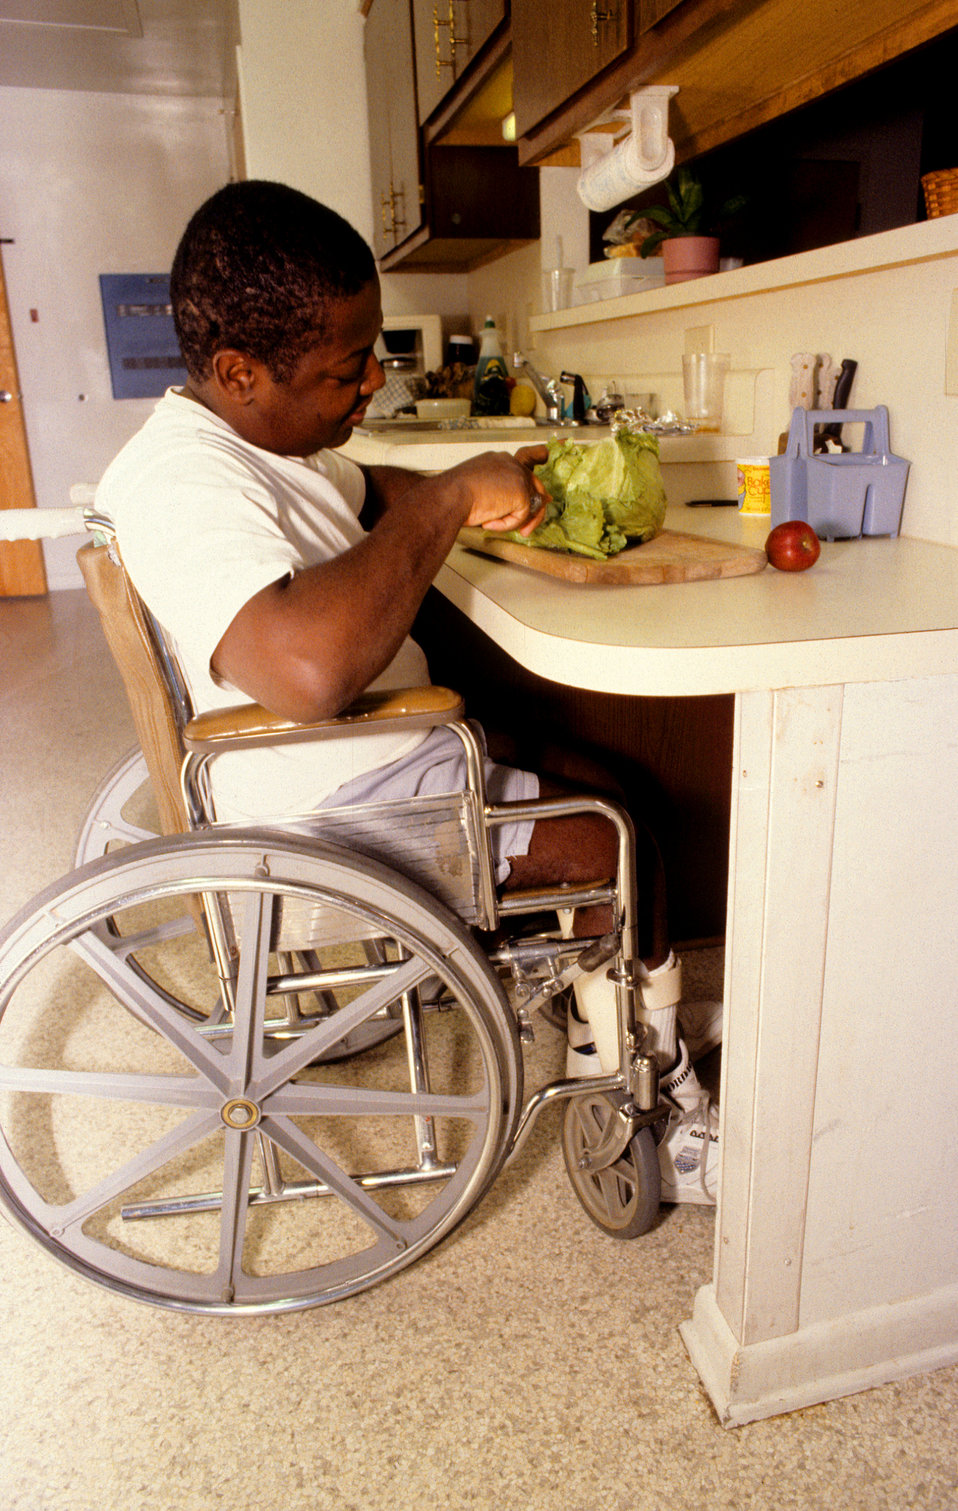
This 1992 image depicted a man seated in his wheelchair inside a kitchen in which the cabenitry had been ergonomically-designed so as to accommodate the widest possible group of end users. These kitchen base cabinets easily converted into knee-spaces critical for people using wheelchairs, as well as those with stamina or balance limitations, who must sit while completing extended food-preparation activities. In this particular image, this man was preparing a salad, as was in the process of cutting a head of lettuce, while seated up close to the edge of a kitchen countertop that had been designed in order to be more accommodating, allowing a wheelchair-seated individual to pull close to the working surfaces.